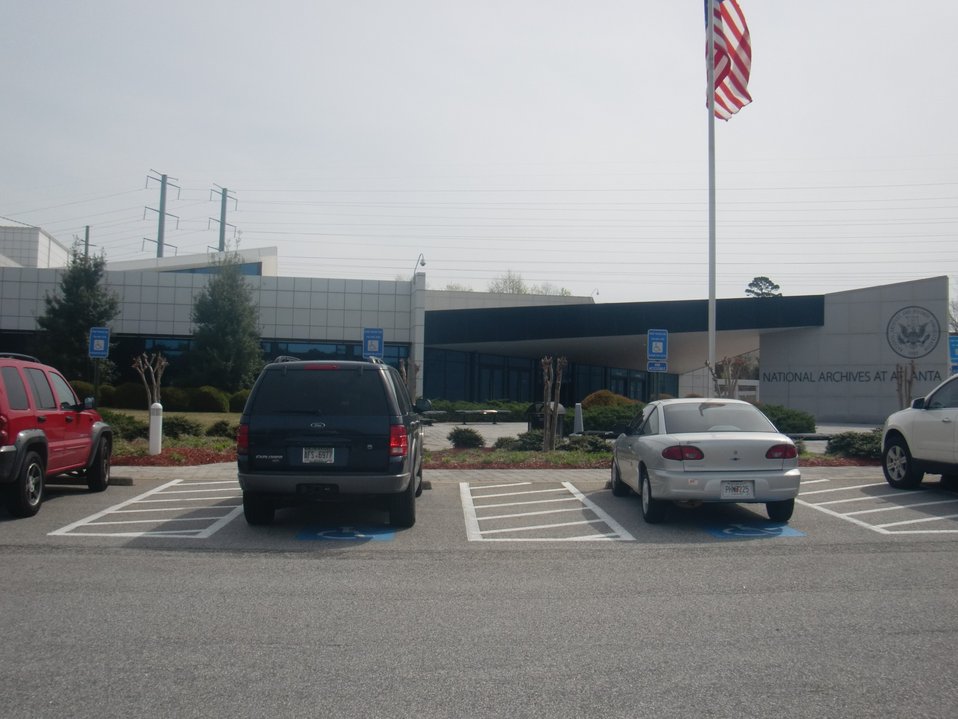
External shot of building; Location: National Archives at Atlanta, Morrow, GA